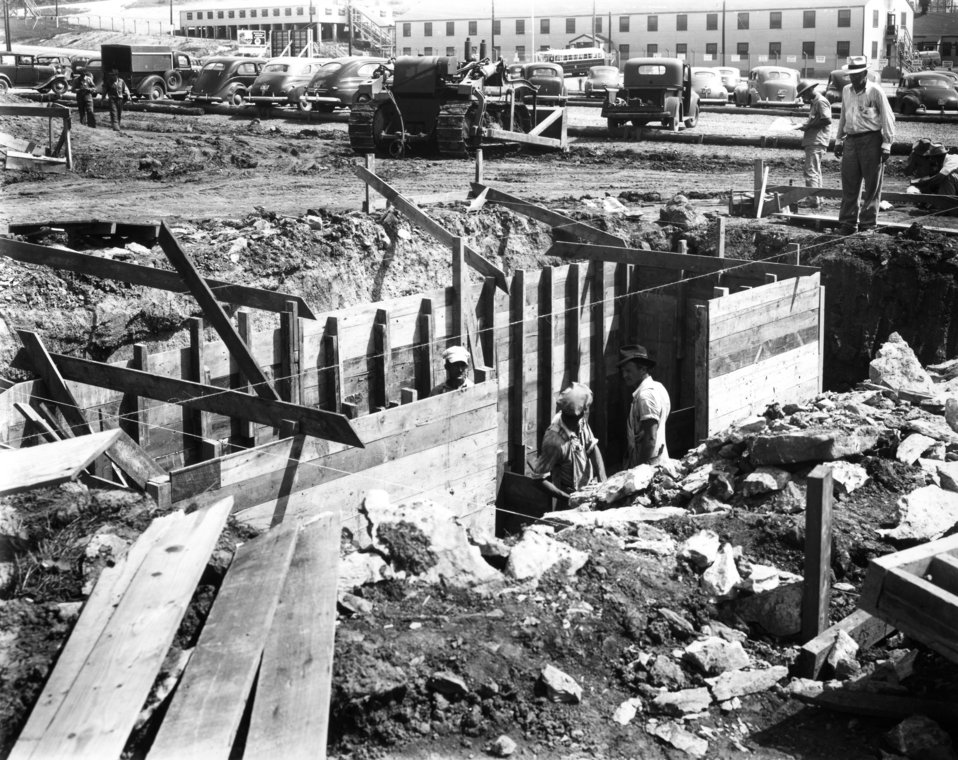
X-10 at Oak Ridge